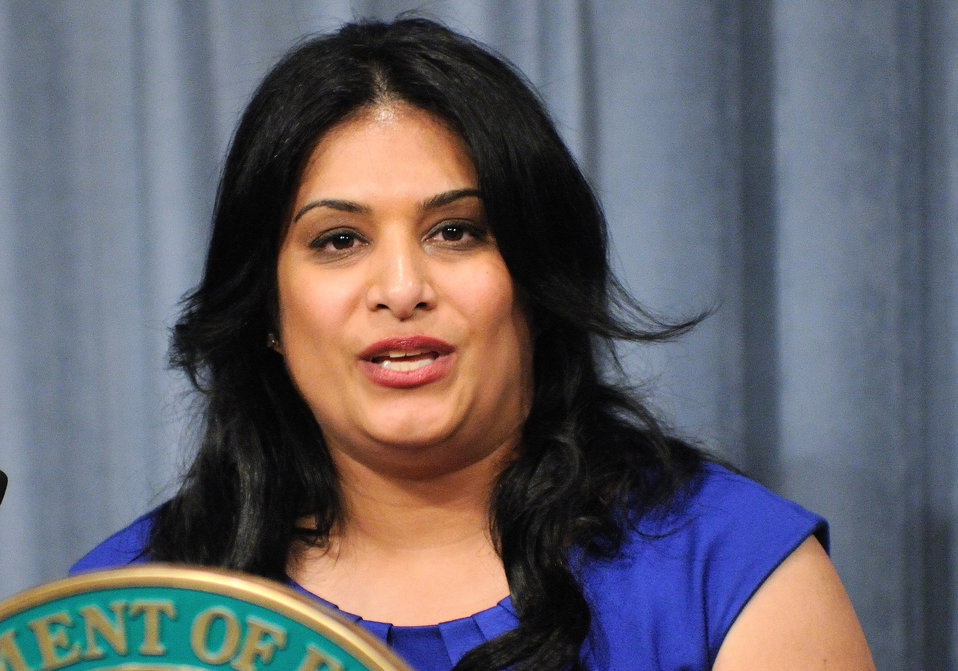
AAPI Heritage Month 2011 (6)